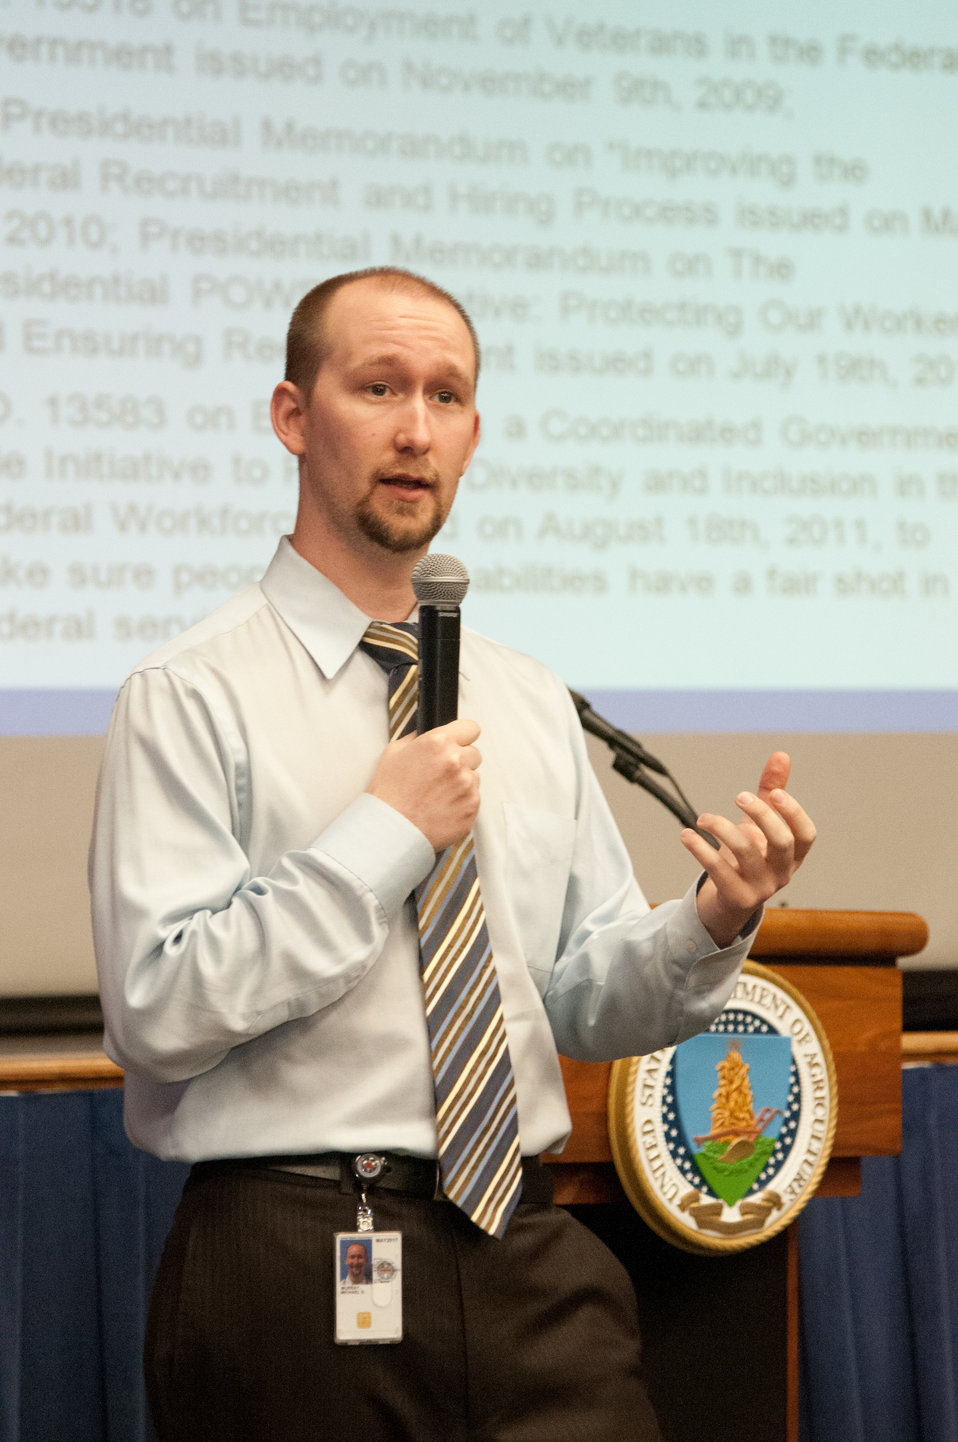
Office of Personnel Management (OPM) Diversity and Inclusion Program Manager Michael Murray discusses diversity and inclusion at the U.S. Department of Agriculture (USDA) Office of Human Resources Management (OHRM) Disability Employment Program Team Training at USDA in Washington, D.C. on Tuesday, May 14, 2013.